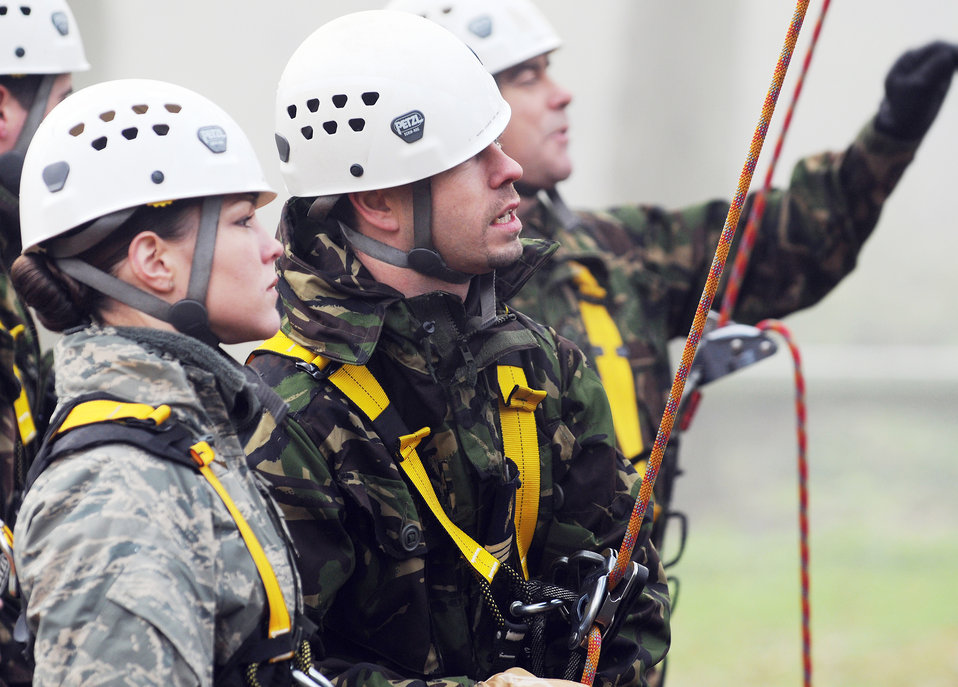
American, British forces join for leadership development

Staff Sgt. Samantha Webb talks with a British airman at the high-ropes course at Royal Air Force Marham Nov. 9, 2009. The Airmen were participants of Leadership, Ethos and Air Power Day, a leadership building event hosted by the camp three times a year. About 40 U.S. Airmen from RAFs Mildenhall and Lakenheath were invited to attend the teambuilding activities. Sergeant Webb is from the 48th Security Forces Squadron.